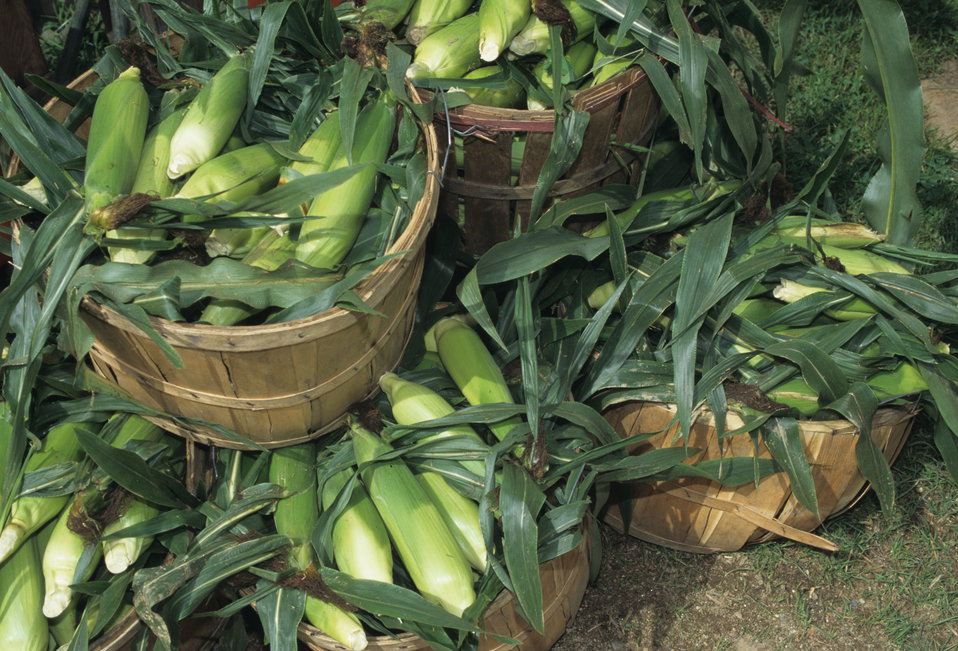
Harvested corn sits in baskets at a farmers market in 1999.